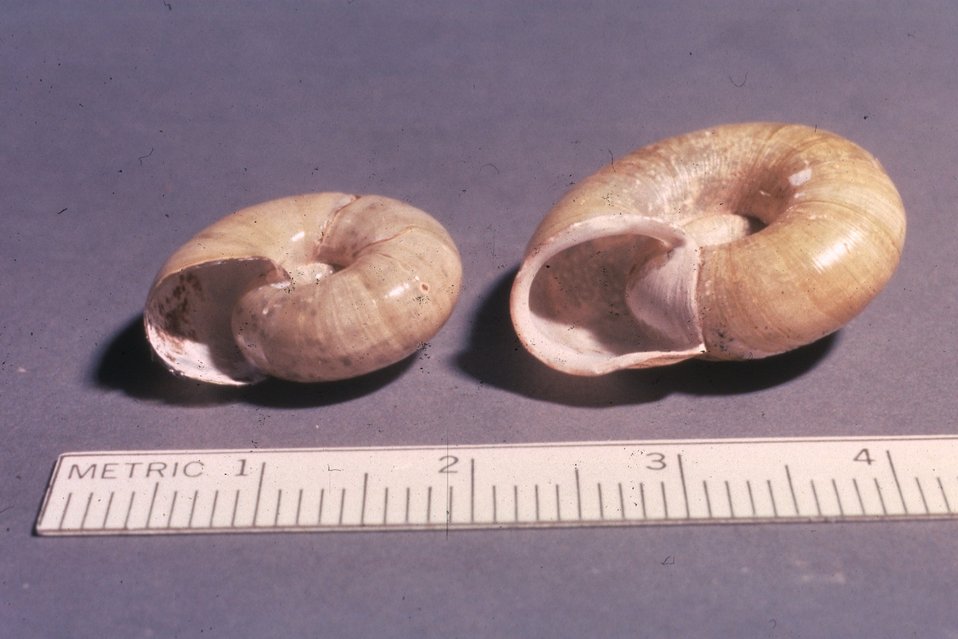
On the right, is a Robust Lancetooth (Haplotrema vancouverense) which is not a survey and manage species. On the left is theOregon Megophix (Megomphix hemphilli).